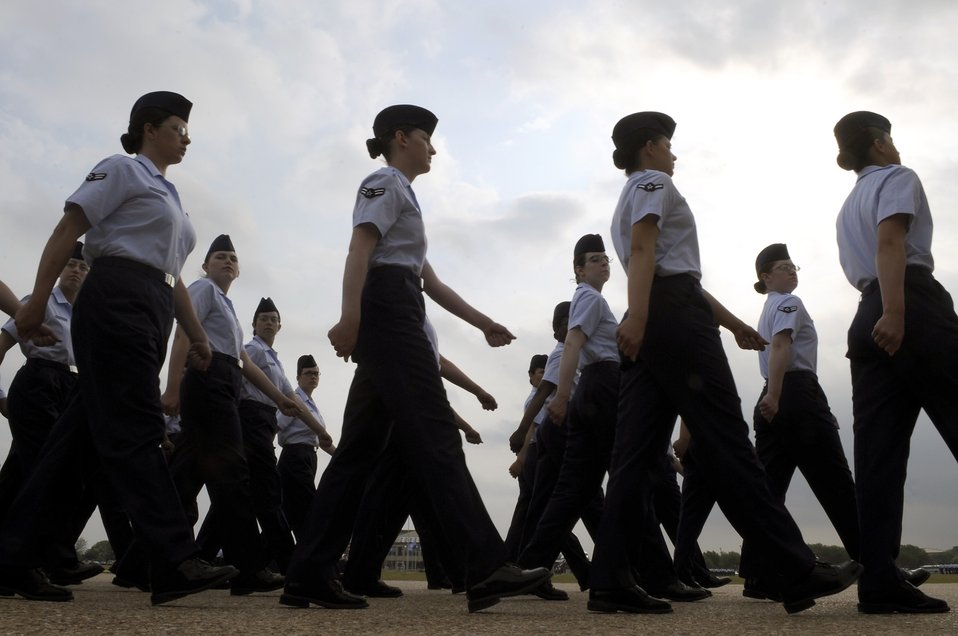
From basic trainee to Airman

Basic trainees pass in review April 24 during their graduation ceremony at Lackland Air Force Base, Texas.